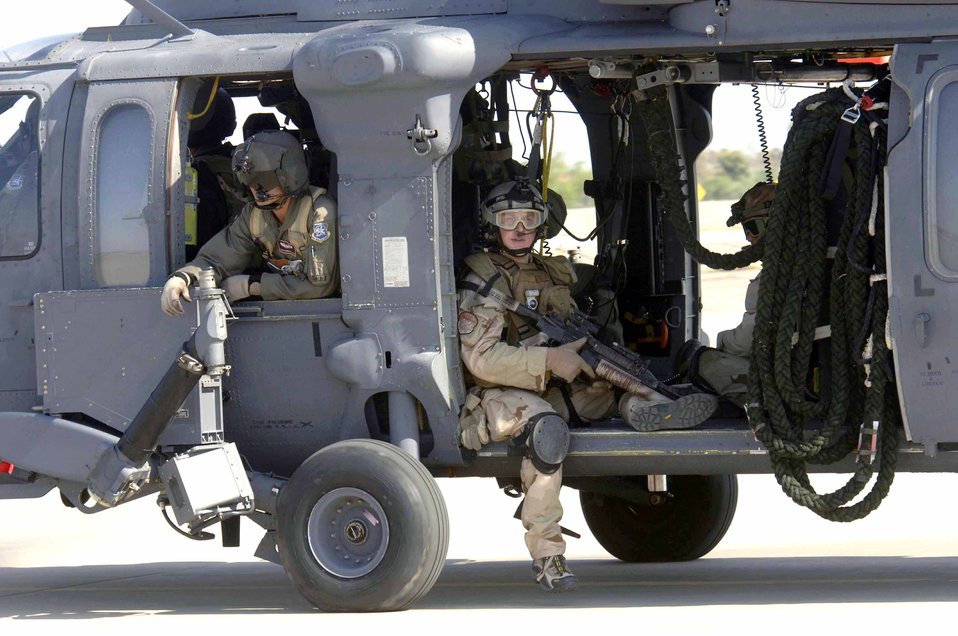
Angel Thunder

Pararescuemen from the 48th Rescue Squadron sit and await take-off in an HH-60 Pave Hawk from the 305th Rescue Squadron. They were headed to Gila Bend, Ariz., on July 25 for rescue training as part of Exercise Angel Thunder. The five-day exercise, held at Davis-Monthan Air Force Base, Ariz., and other areas is designed to provide realistic combat search and rescue training for active-duty, Reserve and Guard Airmen in combat rescue forces.